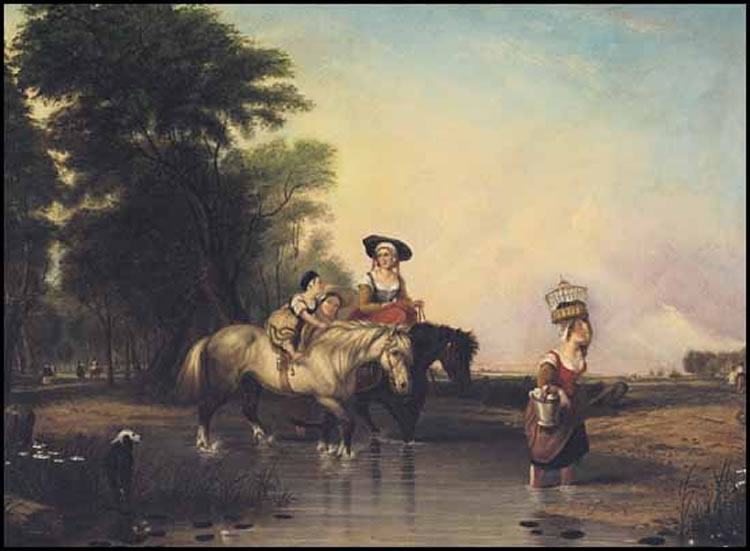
Returning from Market, oil painting by Cornelius Krieghoff inscribed 'After Callcott', 20.5 x 28.5 in.